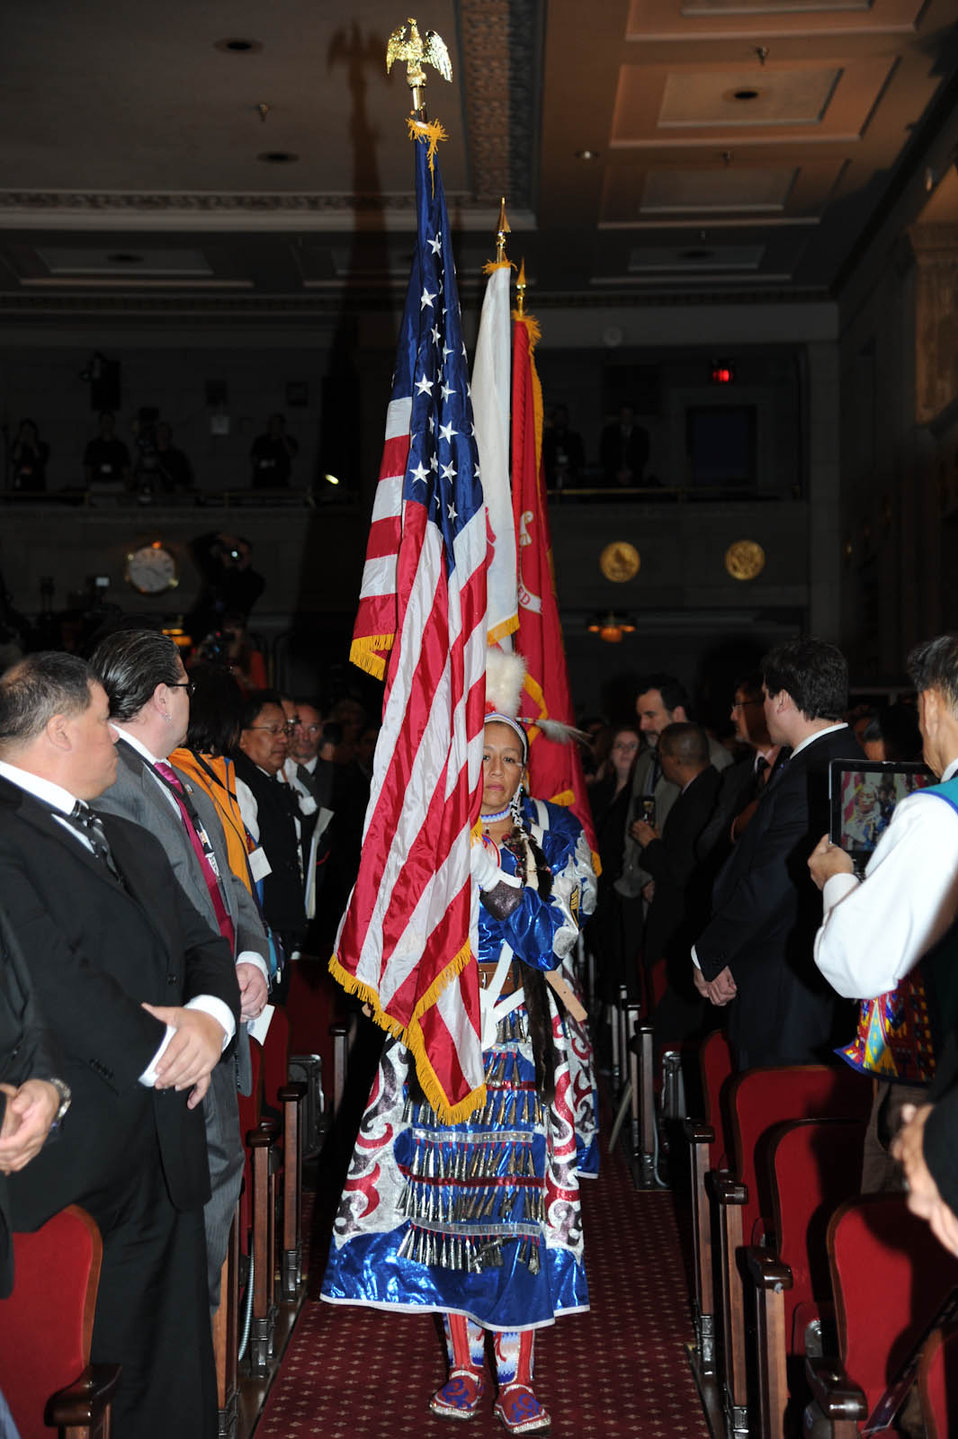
November 13, 2013 - Administrator McCarthy attends White House Tribal Conference

Administrator McCarthy joined President Obama and other administration officials at the White House Tribal Conference on November 13, 2013. The Conference was attended by leaders of 566 federally recognized tribes and members of the White House Council on Native American Affairs.